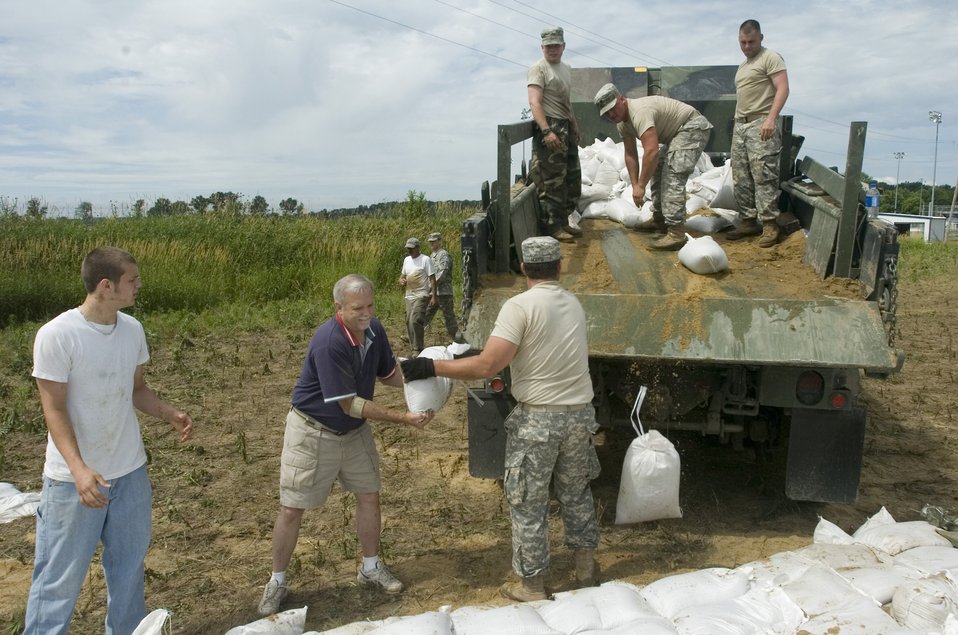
Missouri National Guard protects Winfield levee

Missouri Army National Guard members and local civilians unload a truck full of sandbags June 20 used to prevent erosion of a levee near Winfield, Mo.. The Soldiers are assigned to 1140th Engineering Battalion out of Cape Girardeau, Mo.